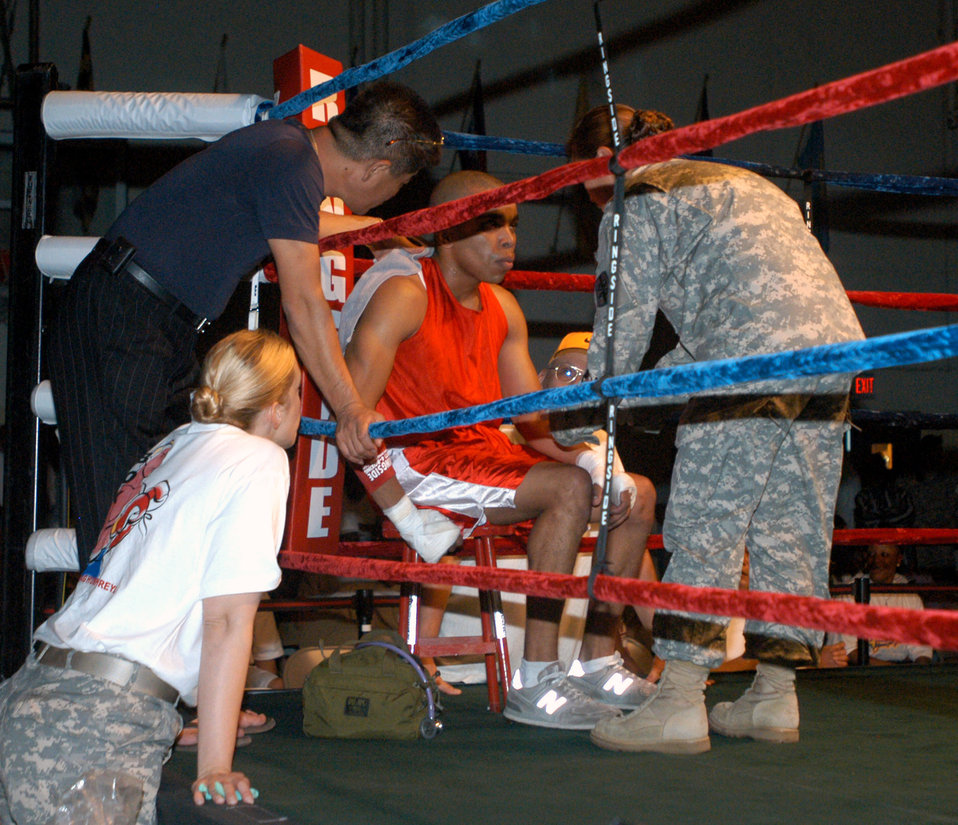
Airmen, Soldiers compete during boxing tourney

Paramedics take a look at Leonardo Avila, representing U.S. Army Garrison Casey, after he was knocked out by Kunsan Air Base's Aaron Valdez during the 2007 summer Smoker Boxing Tournament Aug. 11 at USAG Humphreys. Paramedics were ringside to ensure the safety of all fighters throughout the evening.